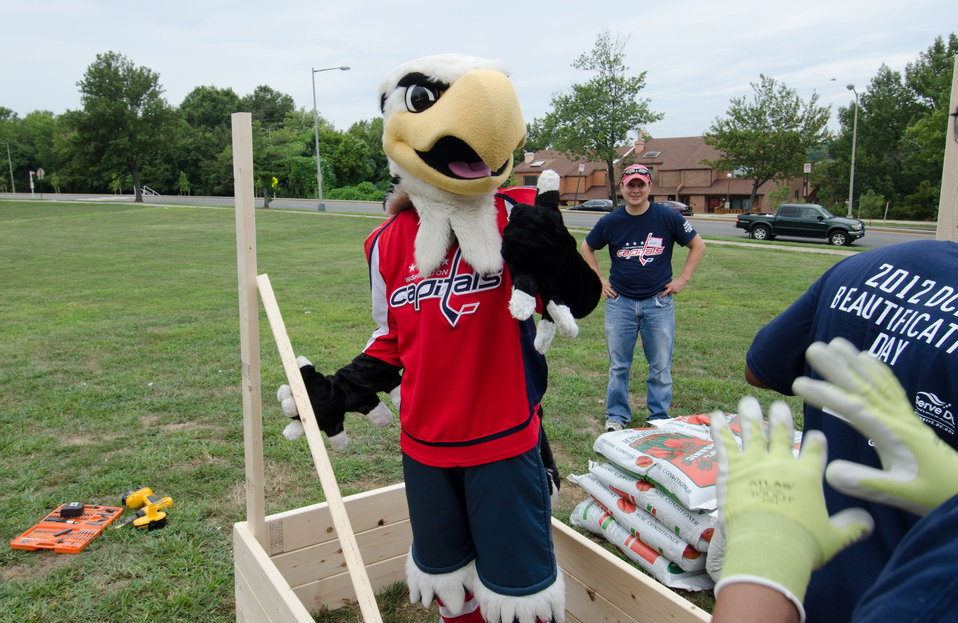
Washington Capitals' hockey mascot Slapshot gives his redesign of planter box uprights, a thumbs-up, to the volunteers that happily try to explain that uprights need to be up, and at a right-angle to the base, when U.S. Department of Agriculture (USDA) People’s Garden Executive Master Gardeners, friends, and family, along with Washington Capitals fans volunteer in District of Columbia Public Schools’ (DCPS) Beautification Day, on Saturday, August 25, 2012, at Thurgood Marshall Elementary School, in Washington, D.C. Each year people are invited to help “spruce up” public school facilities in preparation for the first day of school. More the 70 volunteers pitched in at this large school facility. The People’s Garden effort involves building and painting raised planter boxes, then preparing the soil mixture so they are “ready to grow.” Additionally, a team that includes descendants of U.S. Supreme Court Justice Thurgood Marshall assembles a prefabricated garden toolshed. The Justice’s son, John Marshall leads the team, which includes Brianna the Justice’s great-grand daughter in one of many multi-generational efforts at this school today. Washington Capitals Forward Mike Riberio, his family and mascot Slapshot participated in every project underway at Marshall School. From the outside gardens, to inside murals, and robotics worktable construction, the teams made their goals.